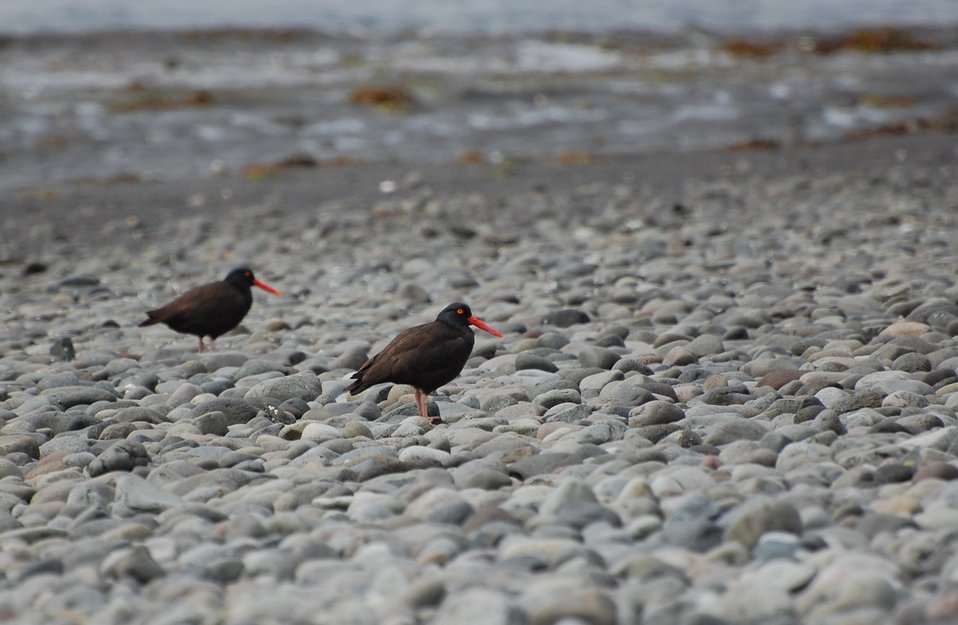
Black Oystercatcher

Kinzarof Lagoon, Izembek National Wildlife Refuge
Photo by Kristine Sowl,
USFWS, Public Domain